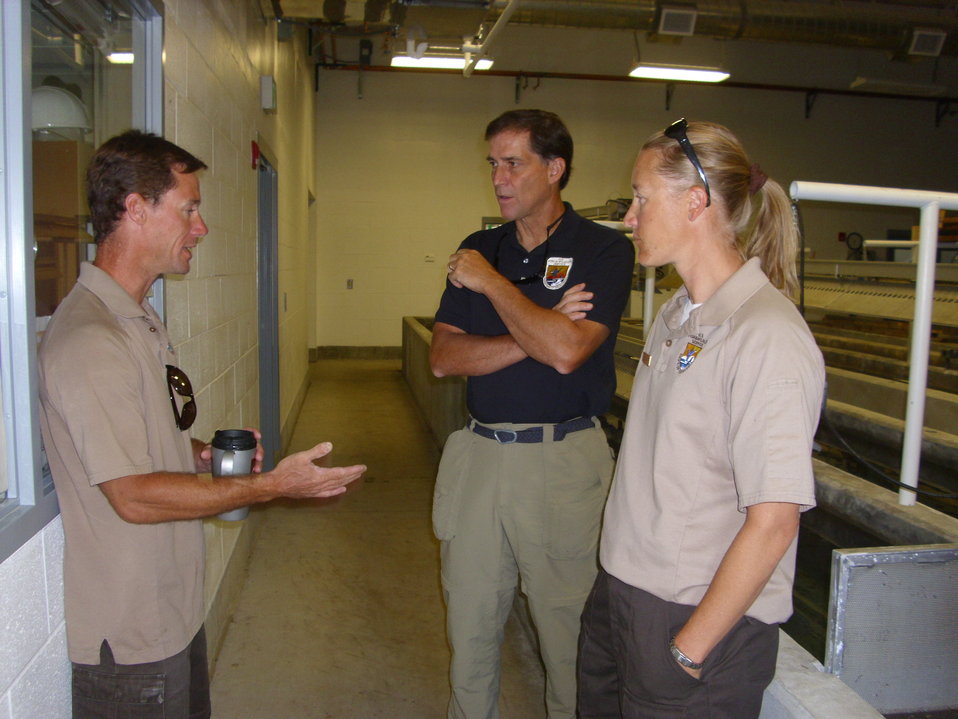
Dan at the National Jackson Fish Hatchery

Jackson Fish Hatchery staff give Dan a tour of the Facility.